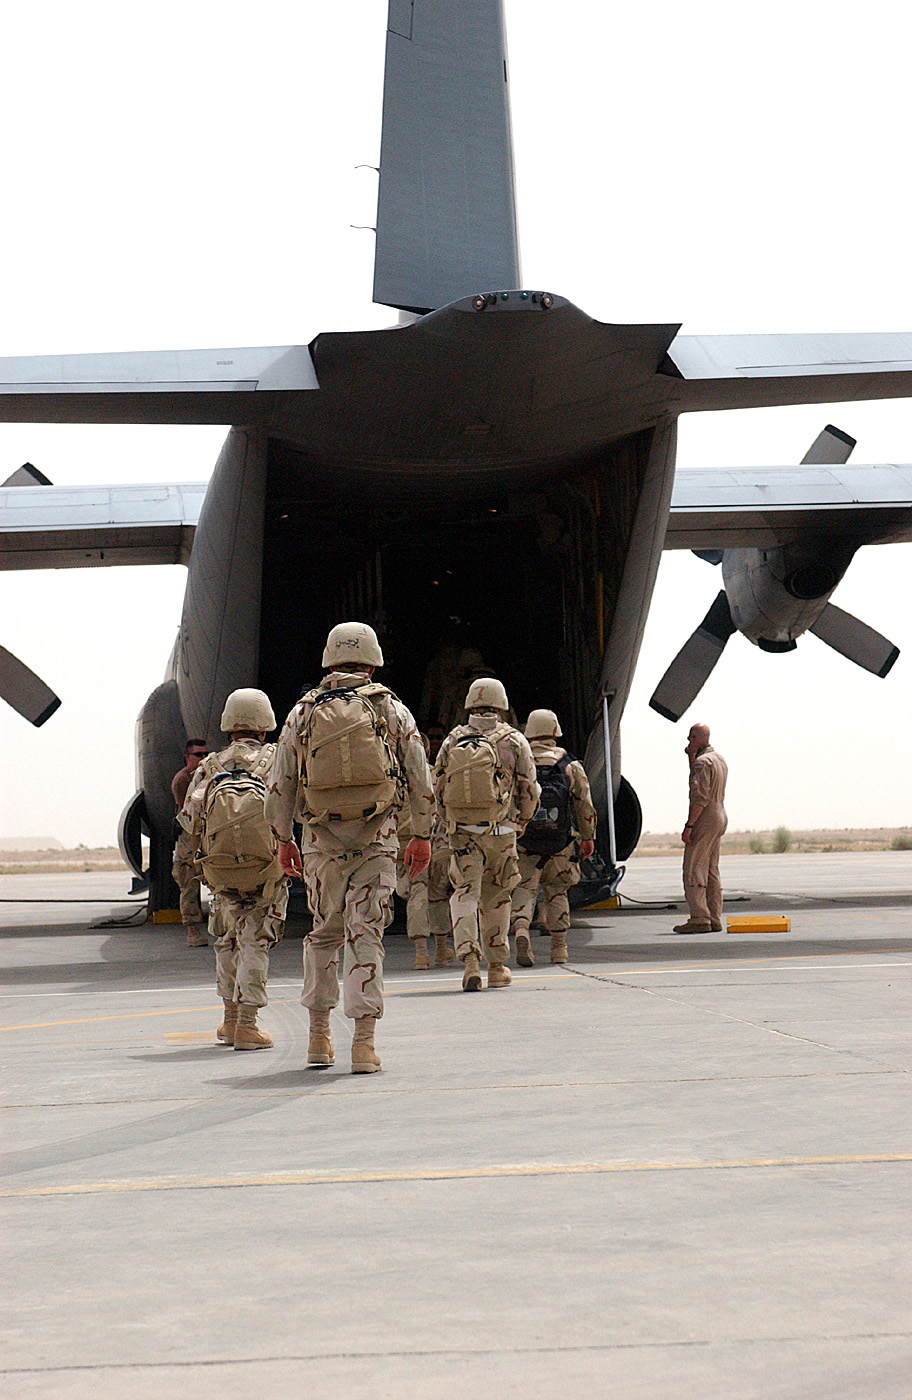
Pushing freight: ATOC moves cargo in, out of Ali quickly

Troops load onto a C-130 Hercules at Ali Base, Iraq. The loading of cargo and passengers on aircraft there is managed by the Airmen from the 407th Expeditionary Logistics Readiness Squadron who work in the Air Terminal Operations Center.